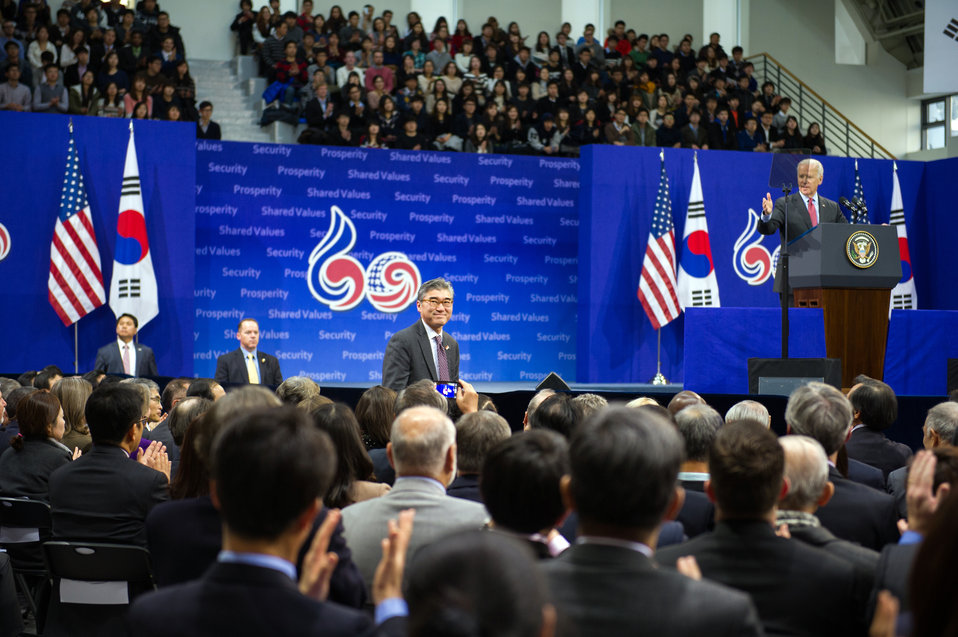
Vice President Biden Introduces Ambassador Kim at Yonsei University

Vice President Joseph Biden introduces U.S. Ambassador to Korea Sung Kim to the audience during a speech at Yonsei University in Seoul, South Korea, on December 6, 2013.